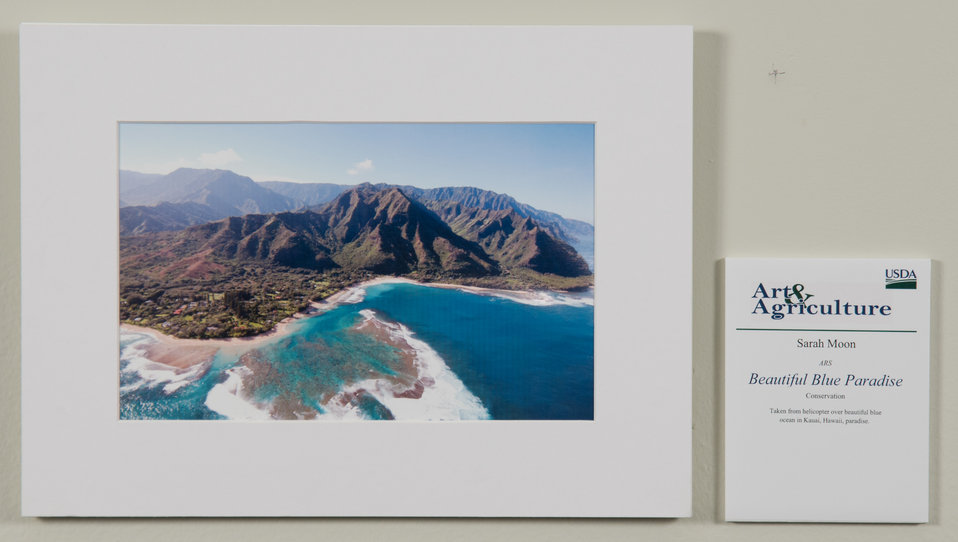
Online Viewer's Choice entries of the 2013 Art & Agriculture, Tuesday, July 9, 2013, in the South Building, Washington, D.C. Themes were expressed by employees from across the department and the contest was open to full-time and part-time USDA employees. Winning artwork will be displayed till the end of the year. U.S. Artistic expression is a creative outlet that is vital for an individual to grow and develop.